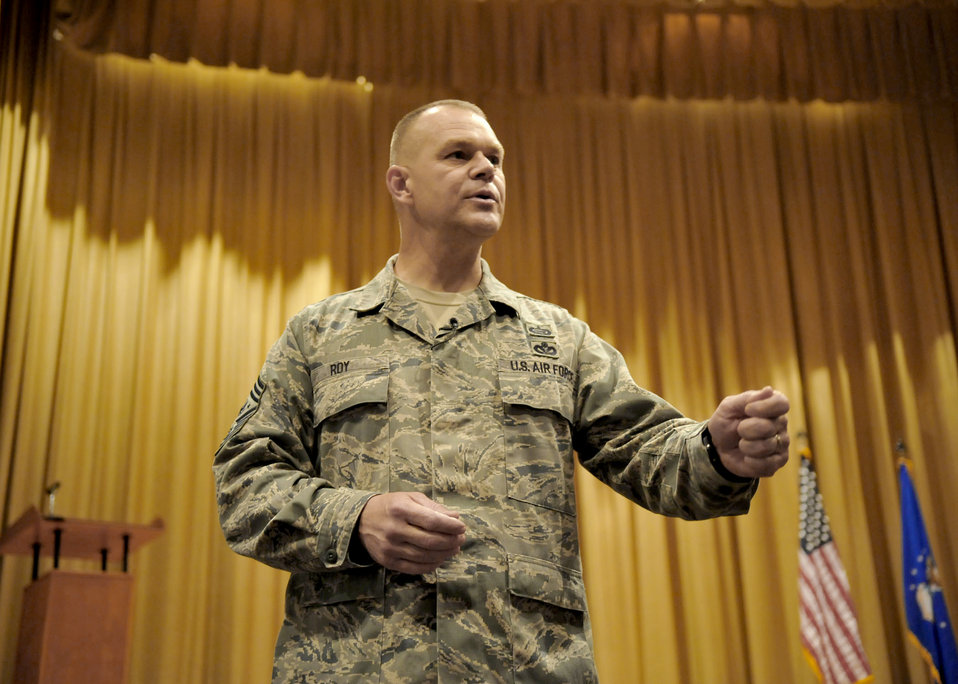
Air Force's top enlisted leader visits NASIC Airmen

Chief Master Sgt. of the Air Force James A. Roy discusses force development with fellow Airmen in the base theater during his visit June 11, 2010, to Wright-Patterson Air Force Base, Ohio.